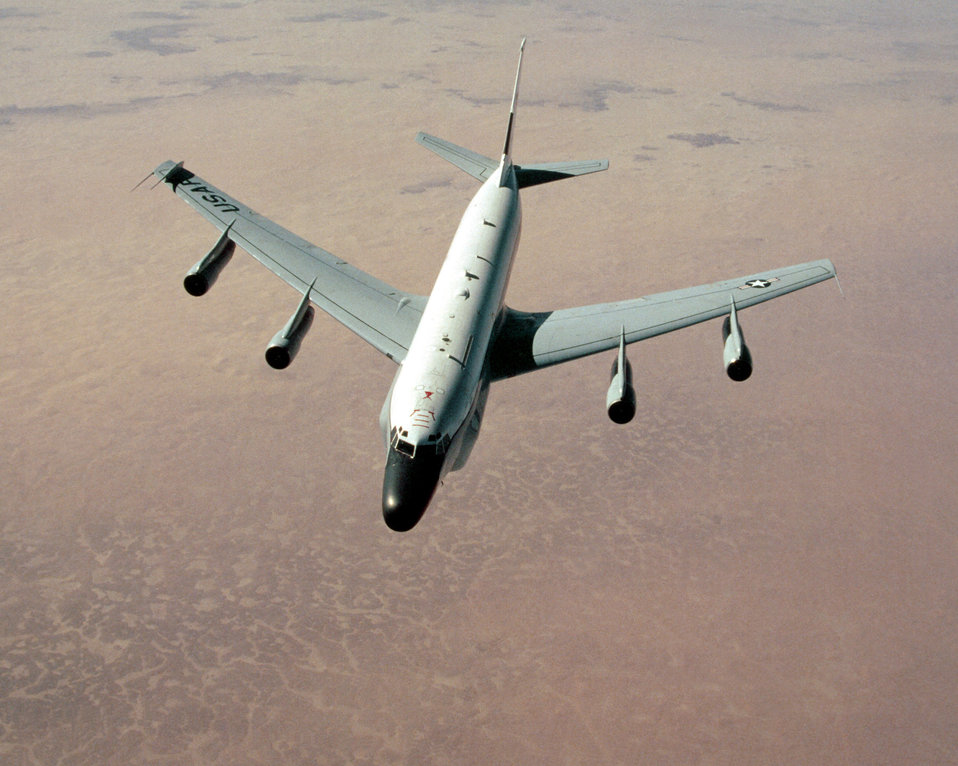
RC-135 Stratoliner

1990's -- An RC-135 Stratoliner aircraft from the 9th Strategic Reconnaissance Wing approaches a KC-135 Stratotanker from the 1700th Air Refueling Squadron Provisional during Operation Desert Shield.